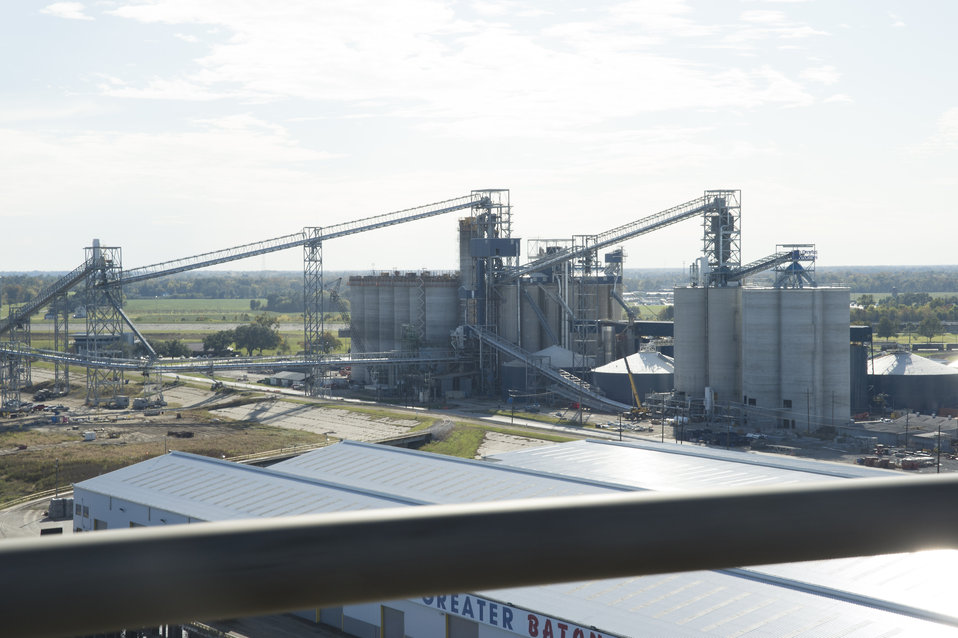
Grain elevators on the Mississippi River near the port of New Orleans, LA on Tuesday, Nov. 19, 2013.